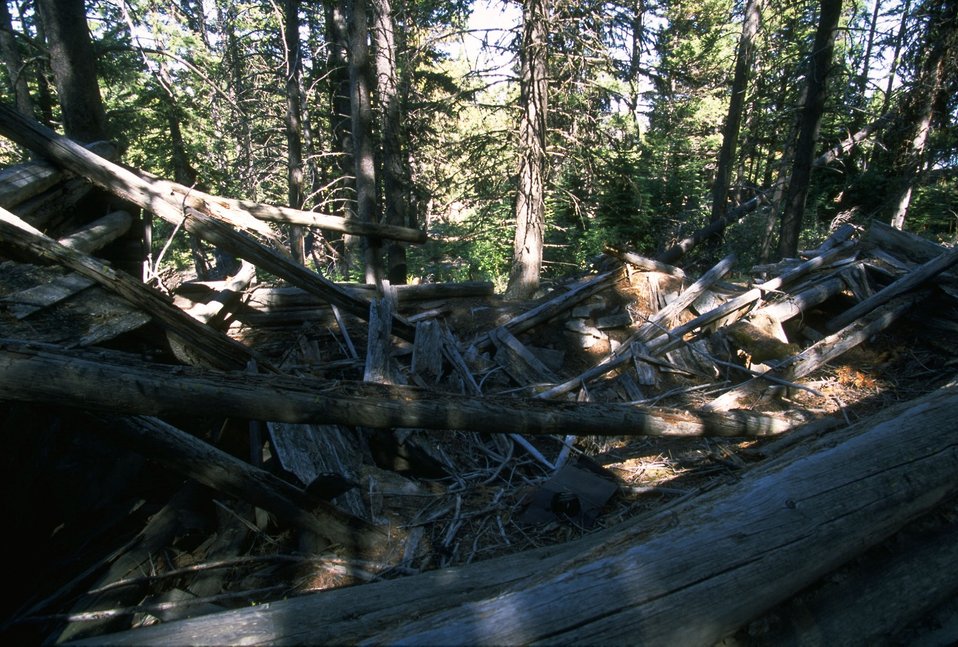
Historic cabin in Coloma Ghost Town